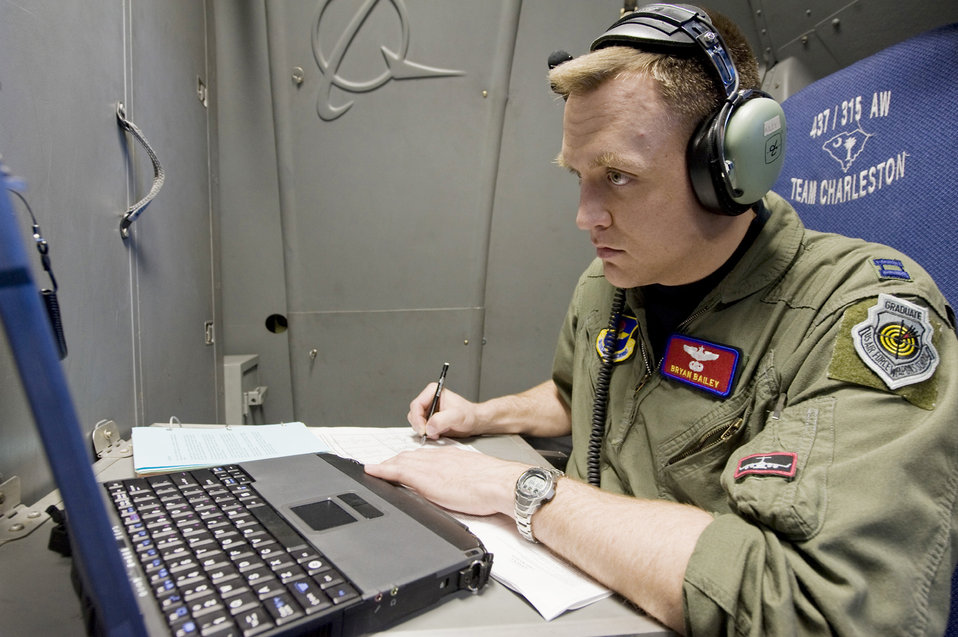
Air drop training coming to Altus AFB

Capt. Bryan Bailey uses an on board computer to translate information received from a drop sonde into coordinates for a precision air drop March 18, 2010, at Altus Air Force Base, Okla. Captain Bailey is a weapons officer with the 58th Airlift Squadron.